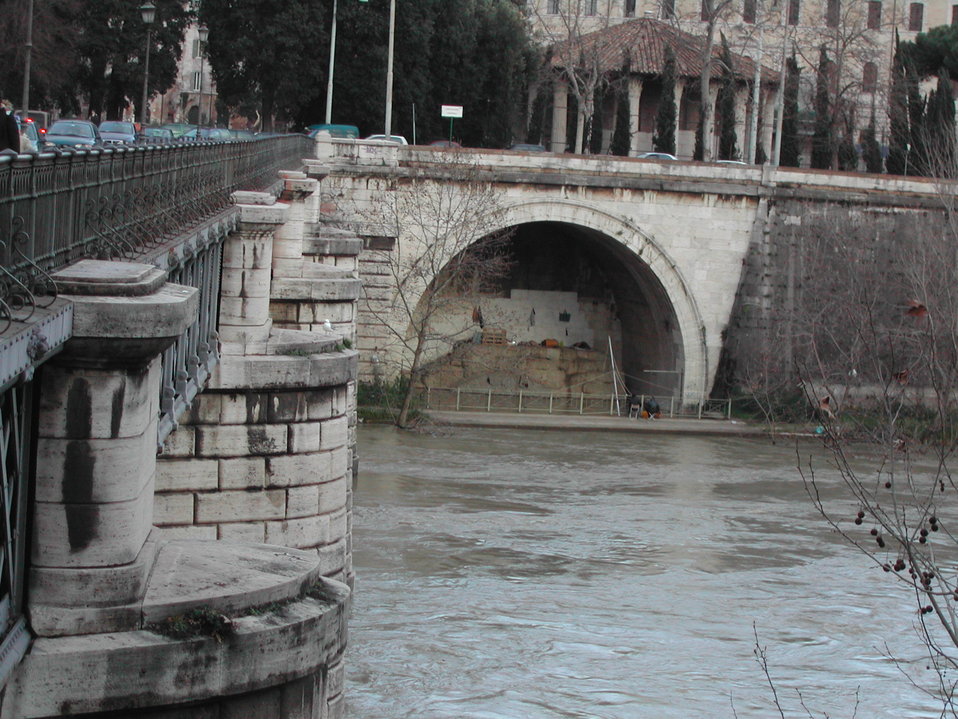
040227 tevere16CloacaMaxima